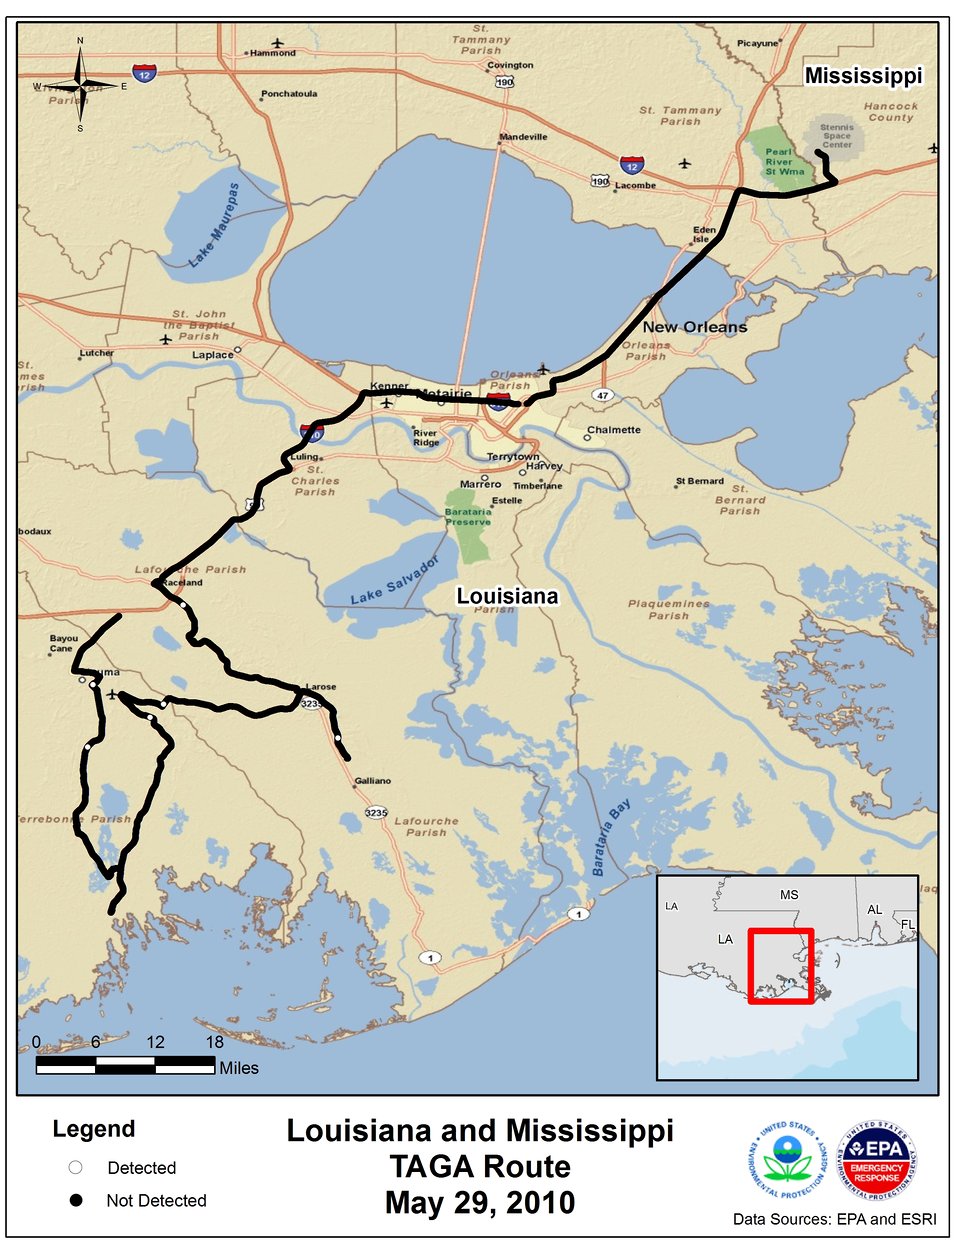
EPA TAGA Air Monitoring Locations May 29, 2010